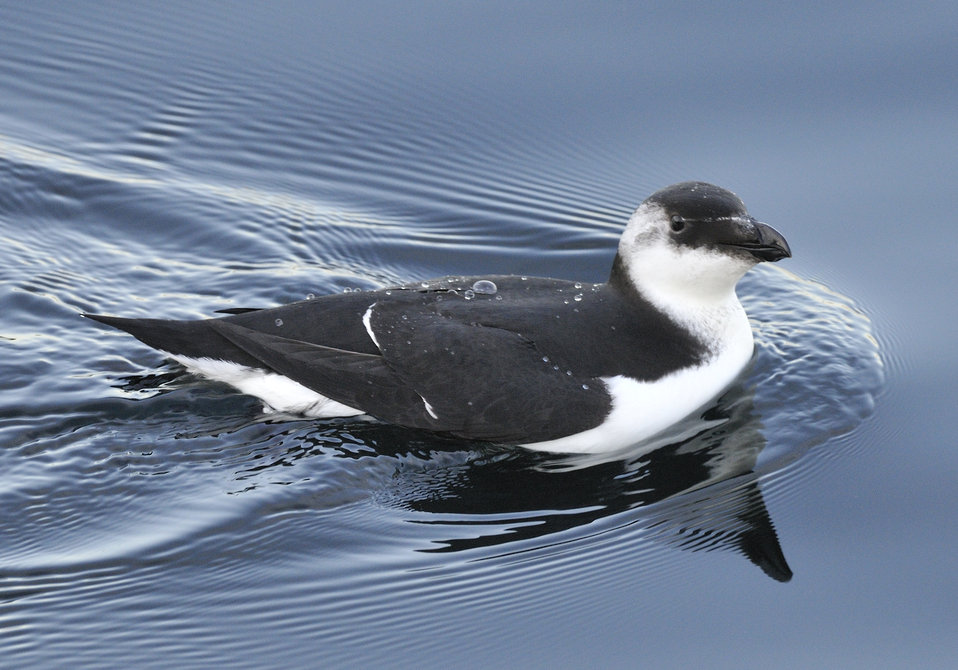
Razorbill

Photographed in Provincetown, MA.